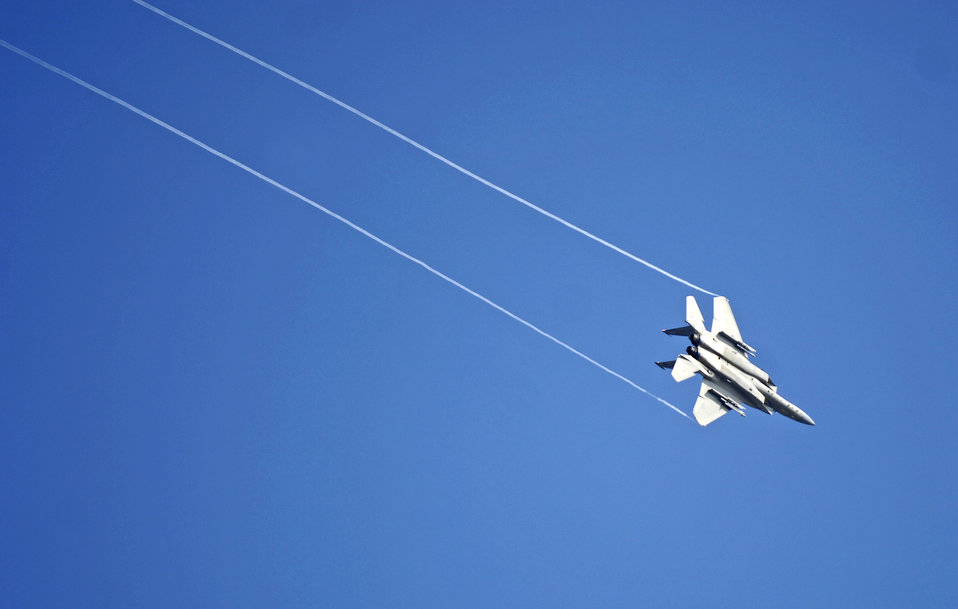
Eagles soar again

An F-15 Eagle returns after flying a mission Jan. 9 to Hickam Air Force Base, Hawaii. The F-15s, from the 199th Fighter Squadron of the Hawaii Air National Guard, have not flown since Air Force officials grounded the F-15 fleet Nov. 3, 2007. Air Combat Command officials cleared a portion of its F-15 A through D models to begin flying today.